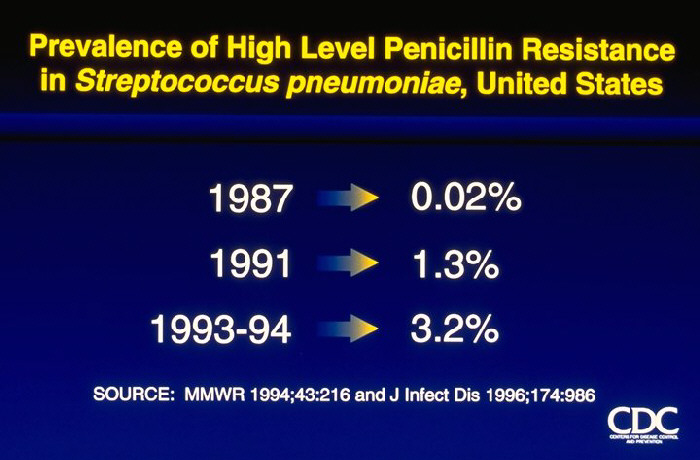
Prevalence of High Level Penicillin Resistance in Streptococcus pneumoniae, United States